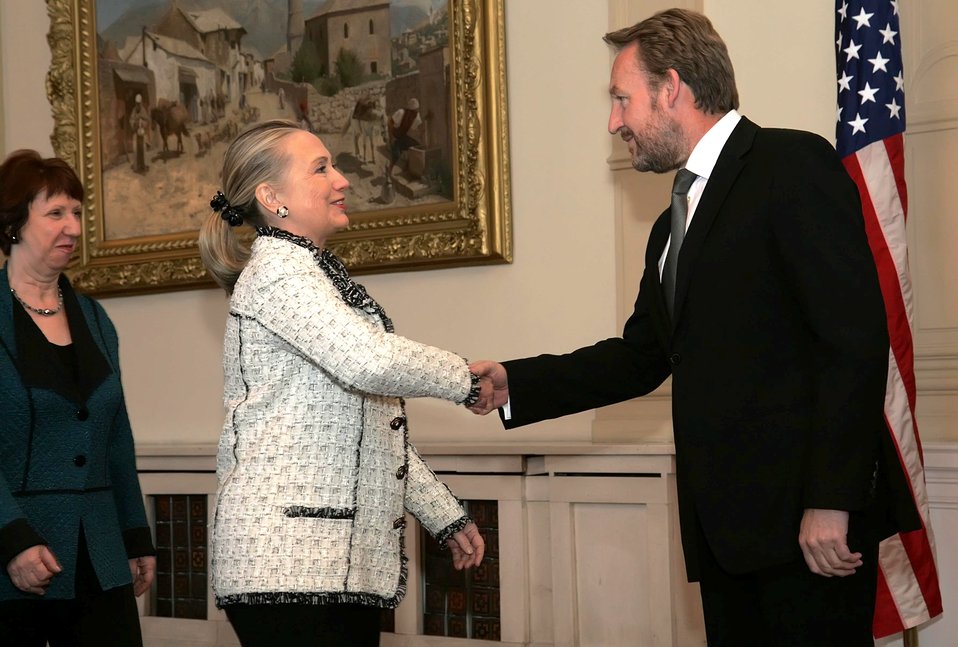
SSecretary Clinton and EU High Representative Ashton Meet With ecretary Clinton Shakes Hands With Chairman of the Presidency of Bosnia and Herzegovina Izetbegovic

U.S. Secretary of State Hillary Rodham Clinton shakes hands with Chairman of the Presidency of Bosnia and Herzegovina Bakir Izetbegovic at the Presidency Building in Sarajevo, Bosnia and Herzegovina, October 30, 2012.